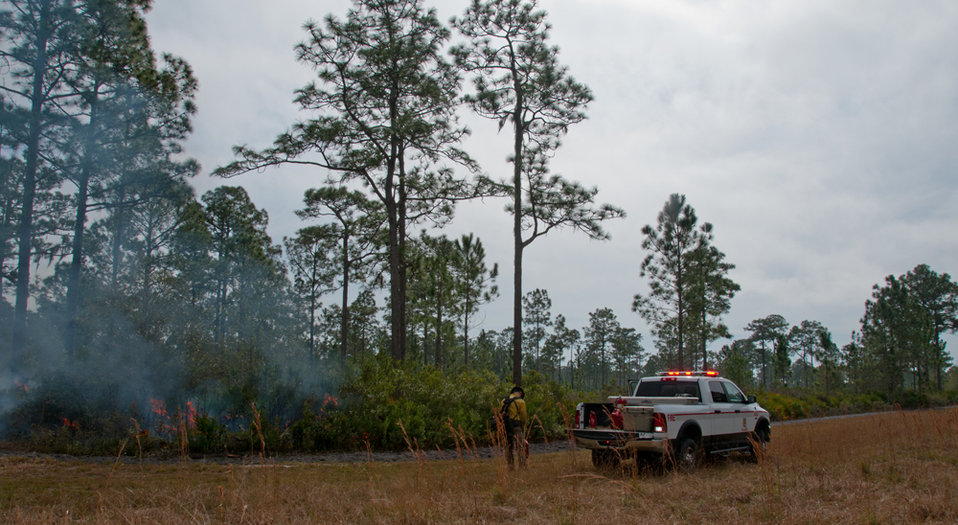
Lake Woodruff Volusia 5 Prescribed Fire Febuary 2014

USFWS Firefighter Chris Wright takes notes of fire weather and fire behavior. On February, 12 2014 USFWS firefighters conducted a 137 acre prescribed fire at Lake Woodruff NWR to reduce the wildfire risk and enhance the wildlife habitat on the southern end of the refuge.